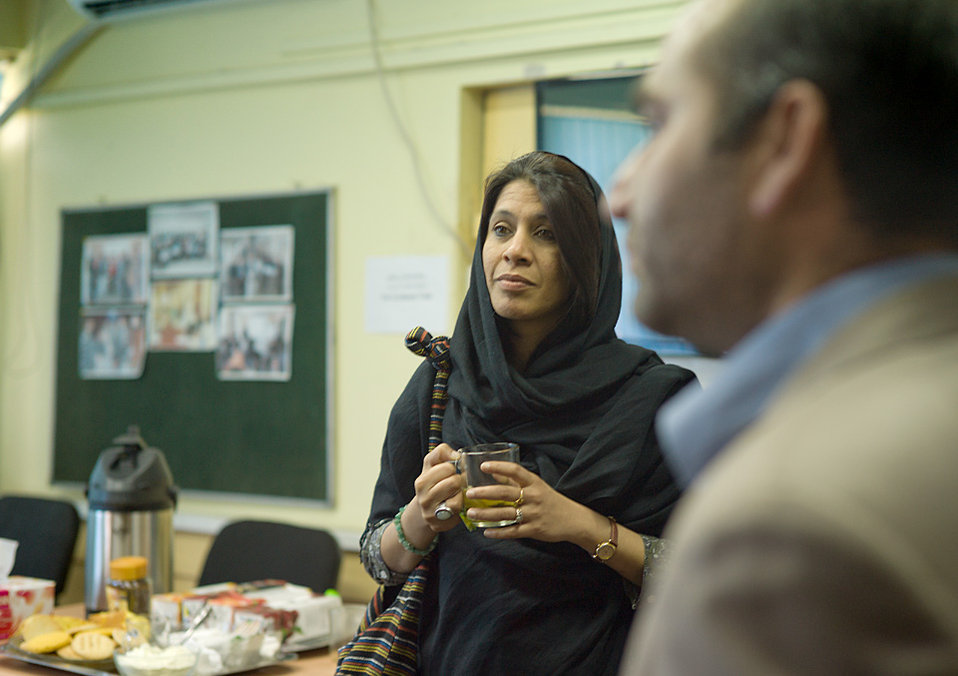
Drinking Chai